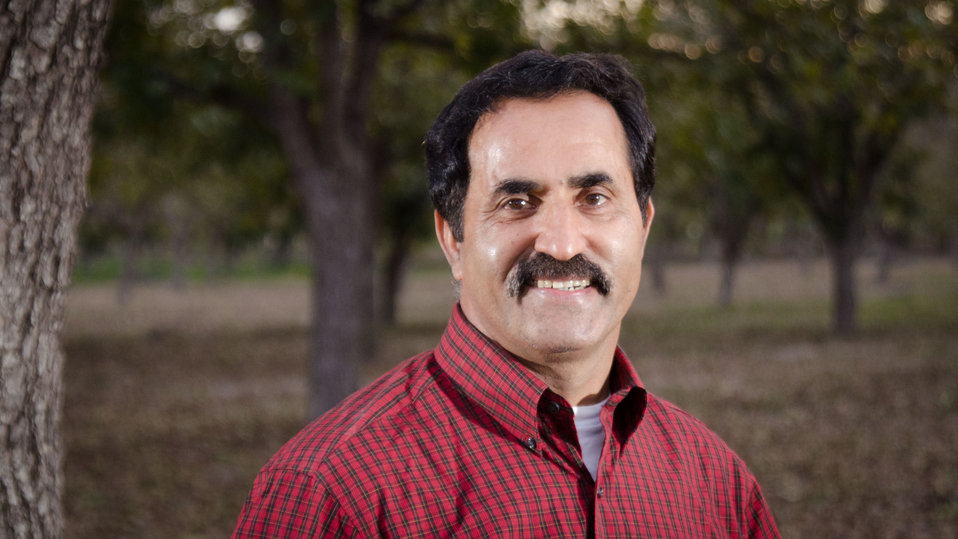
Arrowhead Farms of Crystal City, TX, on Friday, December 9, 2011, has been owned by Mr. Akram Mohammad, a pecan farmer since 2005. The 719 acre farm with 10,000 trees, features some orchards with underground micro irrigation system that feeds water to the roots of 4,380 pecan trees on 146 acres. Mr. Mohammad said, “USDA (U.S. Department of Agriculture) was essential to my business and trees surviving the recent exceptional drought. The trees were stress free thanks to underground micro-irrigation. This is essential to the future growth of Texas agriculture and good for America.” U.S. Department of Agriculture’s (USDA) Environmental Quality Initiative Program (EQIP) awarded Mr. Mohammad a $130,000 grant in 2008. He provided $26,000 for the balance of the $156,000 total cost to install a 146-acre underground micro-irrigation for 4,380 trees.